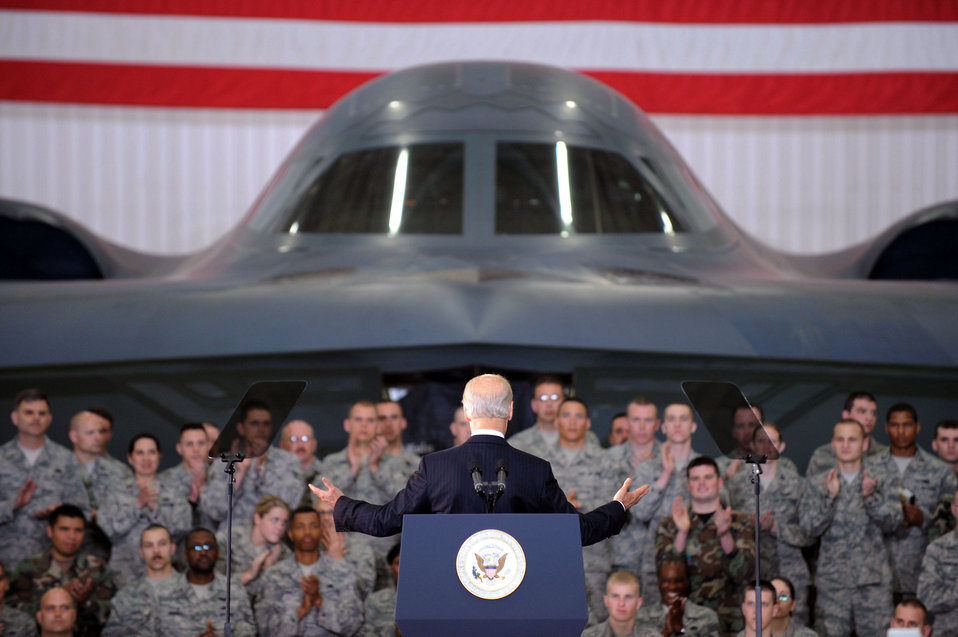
Vice president visits Whiteman

With a B-2 Spirit bomber in the background, Vice President Joe Biden speaks to the troops at Whiteman Air Force Base, Mo., April 16 to show the administration's support for the troops. Mr. Biden later visited Jefferson City and the University of Missouri-St. Louis to highlight progress of the Recovery Act.